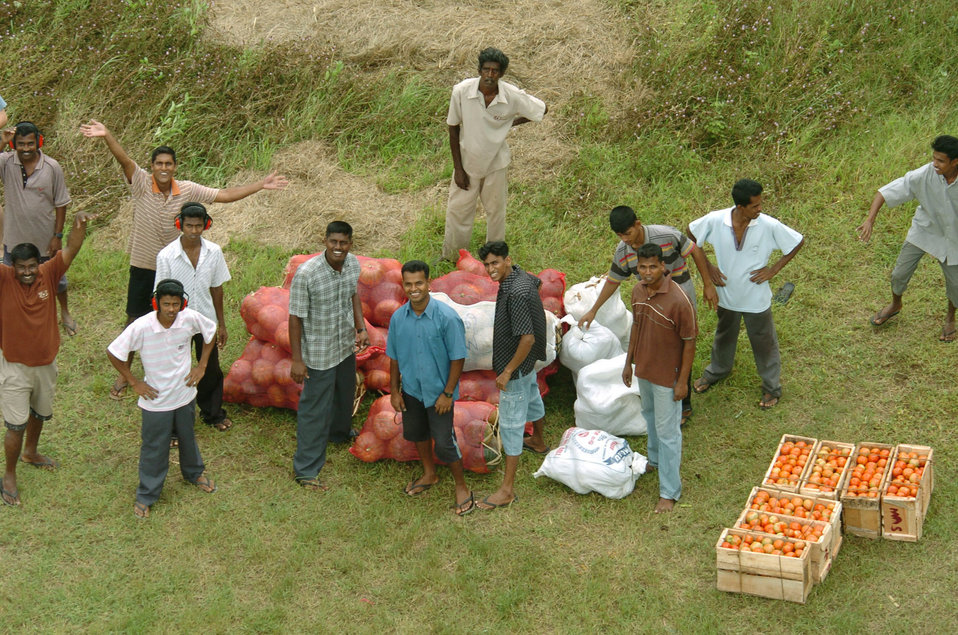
Air Force continues aid in Sri Lanka

DAMBULA, Sri Lanka -- A supply of vegetables is ready to be loaded onto an HH-60 Pave Hawk helicopter from the 33rd Rescue Squadron based at Kadena Air Base, Japan. The helicopter landed here during an Operation Unified Assistance mission.